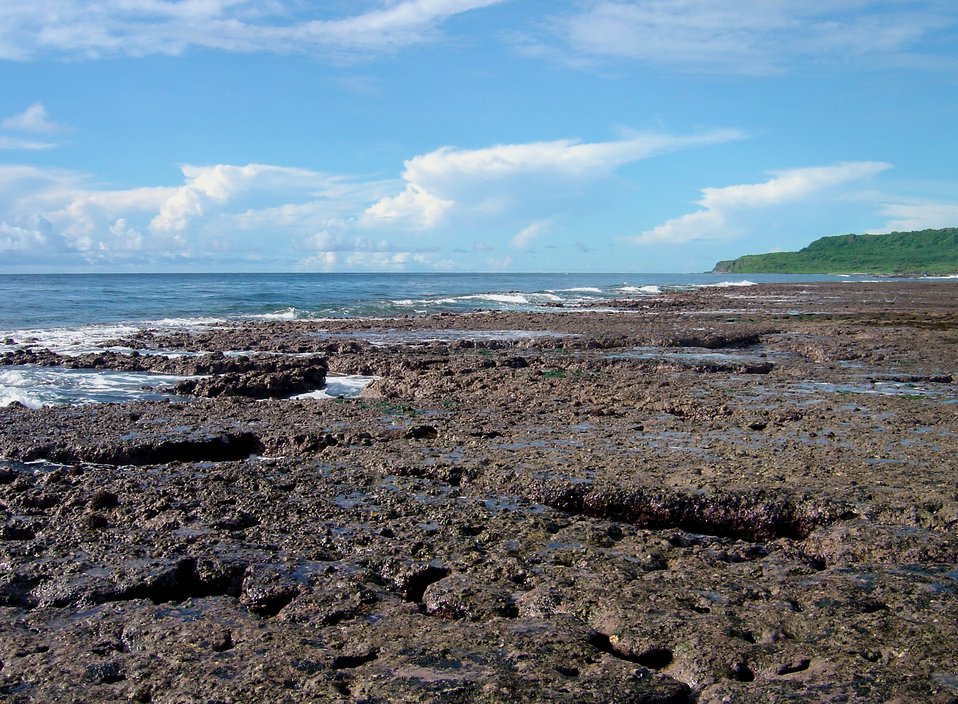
Uncovered reef flat with intervening channels at low tide on the Guam coastline.